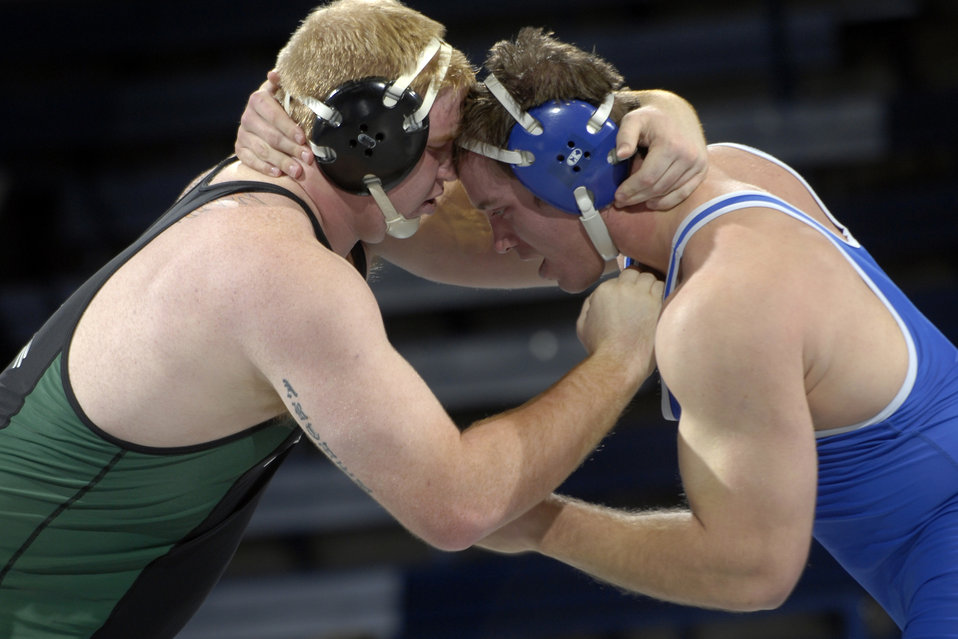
Falcons lose in first home contest

Falcon senior Stephen Larson wrestles Ohio University's Andy Hartshorn in the heavyweight class during the U.S. Air Force Academy's first home contest of the season at Clune Arena Dec. 11, 2009. Hartshorn won the match 7-4, and Air Force lost the contest 35-3 against Ohio.